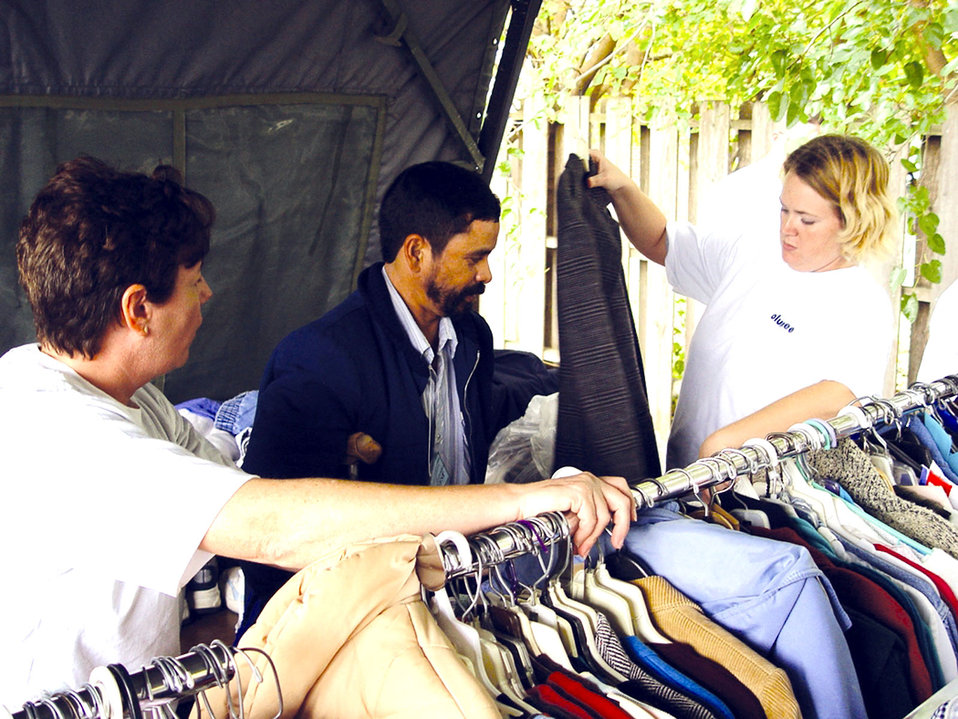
Airmen offer stand down for homeless veterans

WICHITA, Kan. -- Senior Master Sgt. Denise Mikolajczyk (left) and Tech. Sgt. Freedom Bruce (right) help a homeless veteran find a warm coat during a homeless veterans stand down here Oct. 22. Sergeant Mikolajczyk is assigned to the 22nd Mission Support Squadron; Sergeant Bruce is assigned to the 22nd Communications Squadron. Both Airmen are stationed at nearby McConnell Air Force Base.